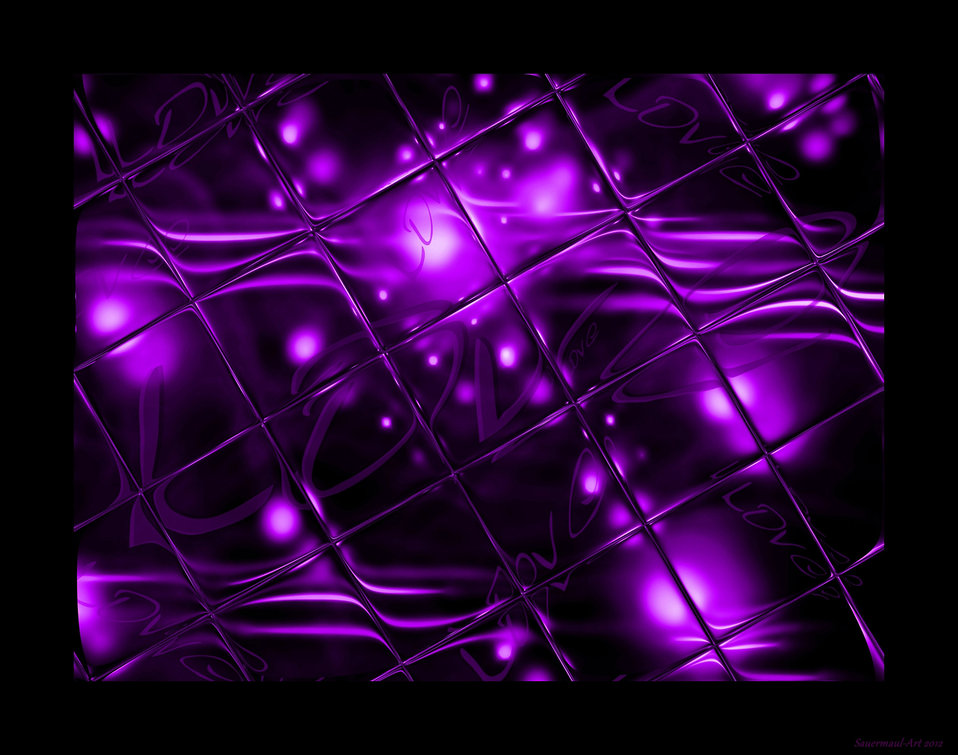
Picture of love in purple

Declaration of love.